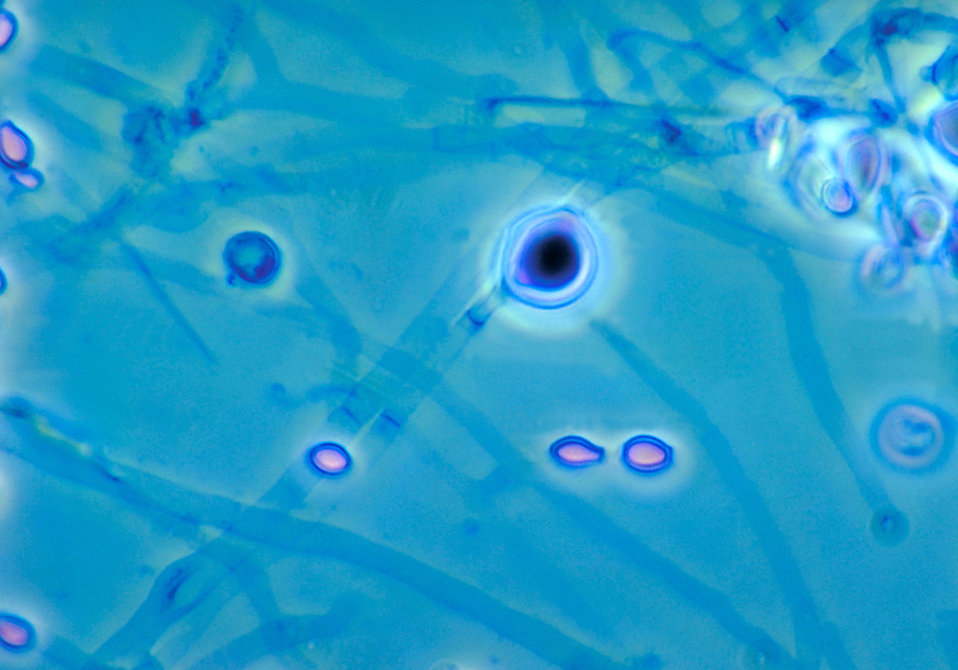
This photomicrograph depicts fungal spores and adiaspores of what may be an Emmonsia sp., or Chrysosporium sp..